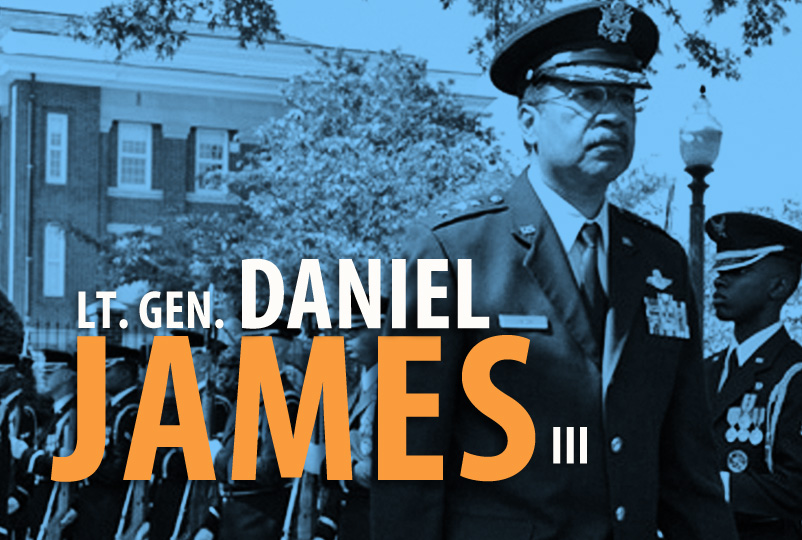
Lt. Gen. Daniel James III